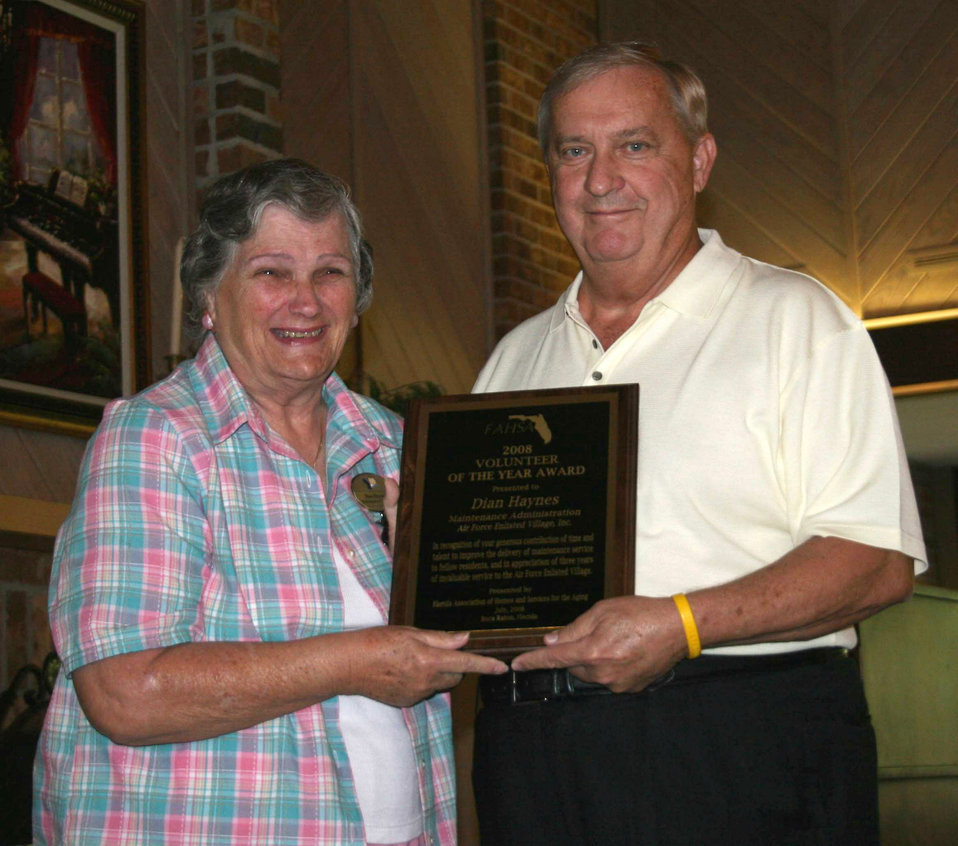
Village resident receives volunteerism award

Air Force Enlisted Village President and CEO James C. Binnicker presents Dian Haynes with the Florida Association of Homes and Services for the Aging Volunteer of the Year award.